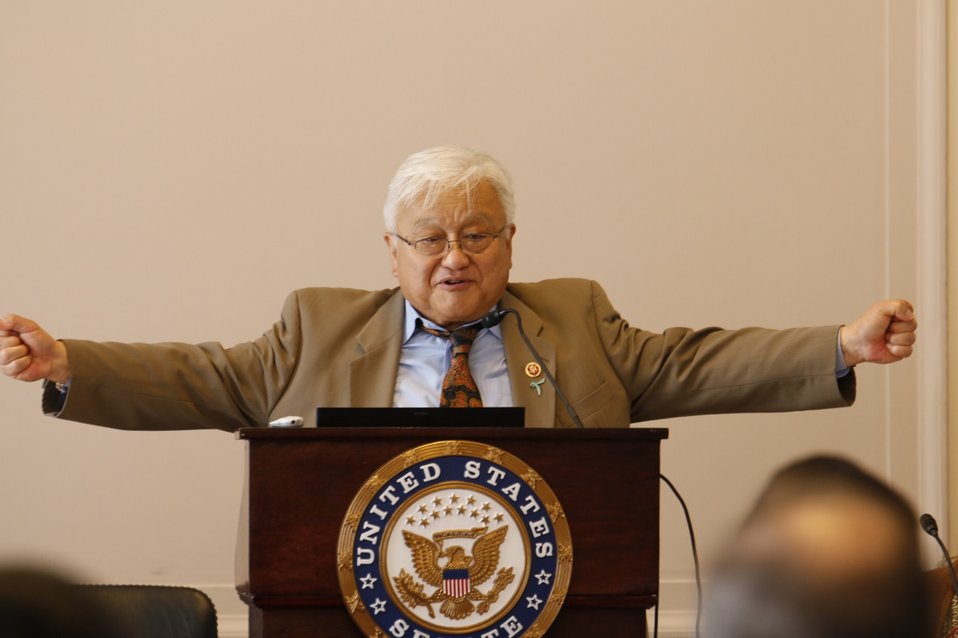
Honda

May 9, 2014 Congressional Briefing